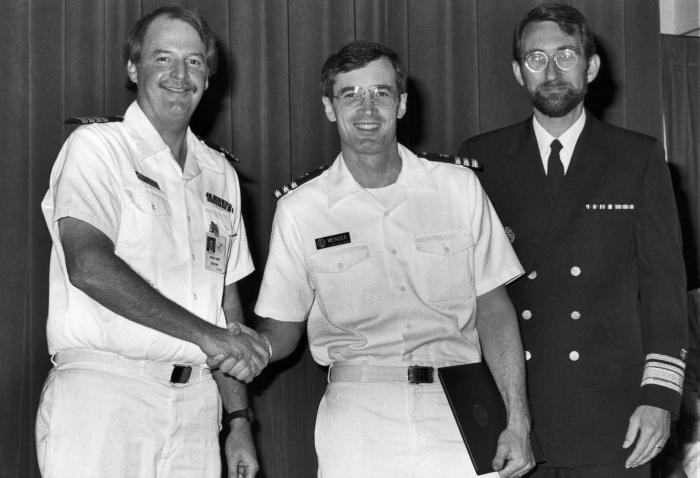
This photograph shows Dr. James Hughes (left), head of the Centers for Disease Control's National Center for Infectious Diseases (NCID), and Dr. William L. Roper (right), former Director of the CDC (1990 - 1993), presenting a 1993 CDC Achievement Award to Dr. Jay D. Wenger (center), who at that time was the Chief of the Childhood and Respiratory Diseases Branch.